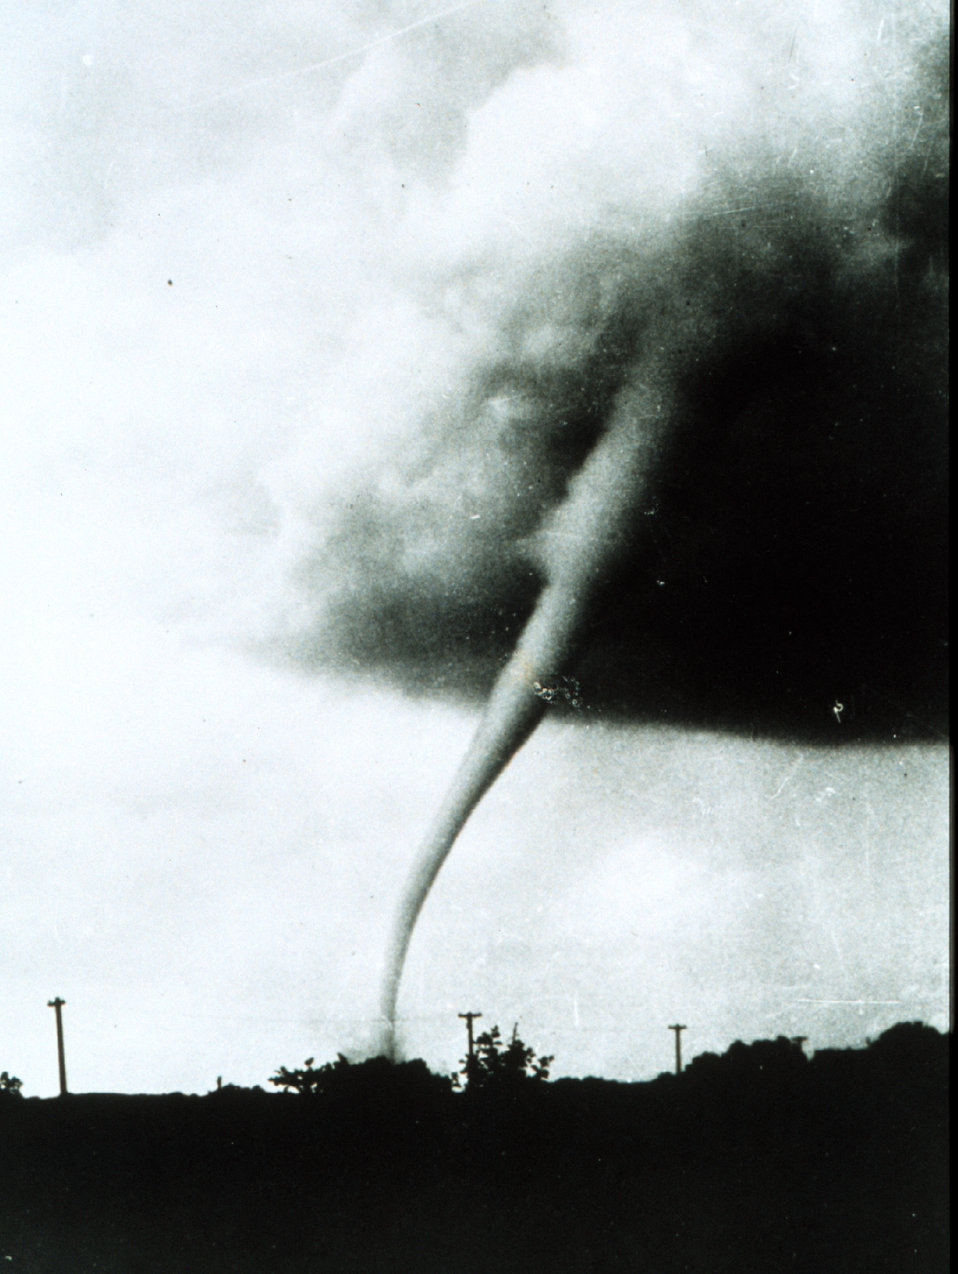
Tornado at Manhattan, Kansas